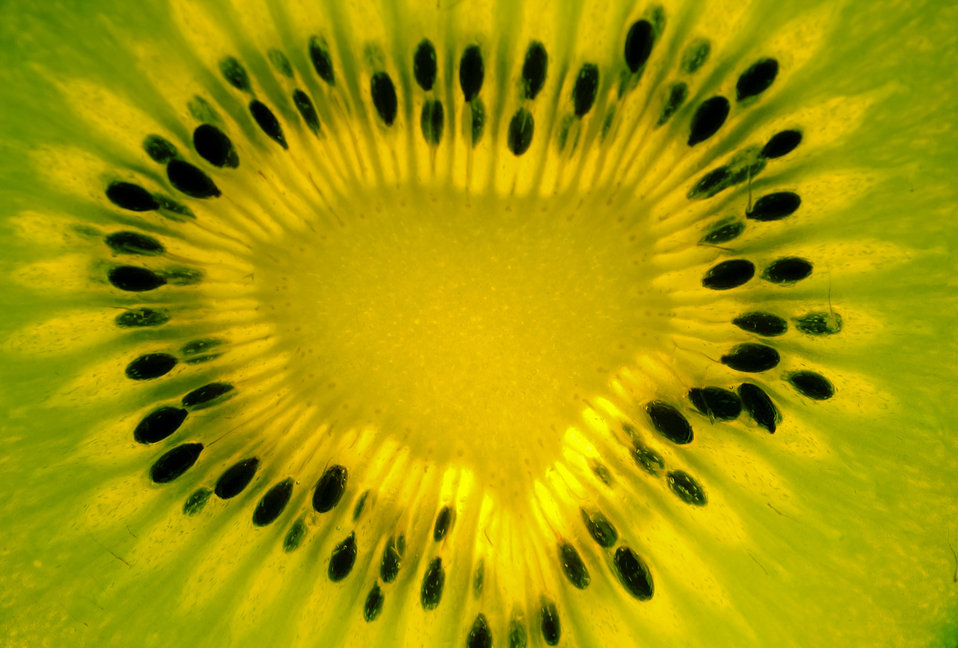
Kiwi - background.